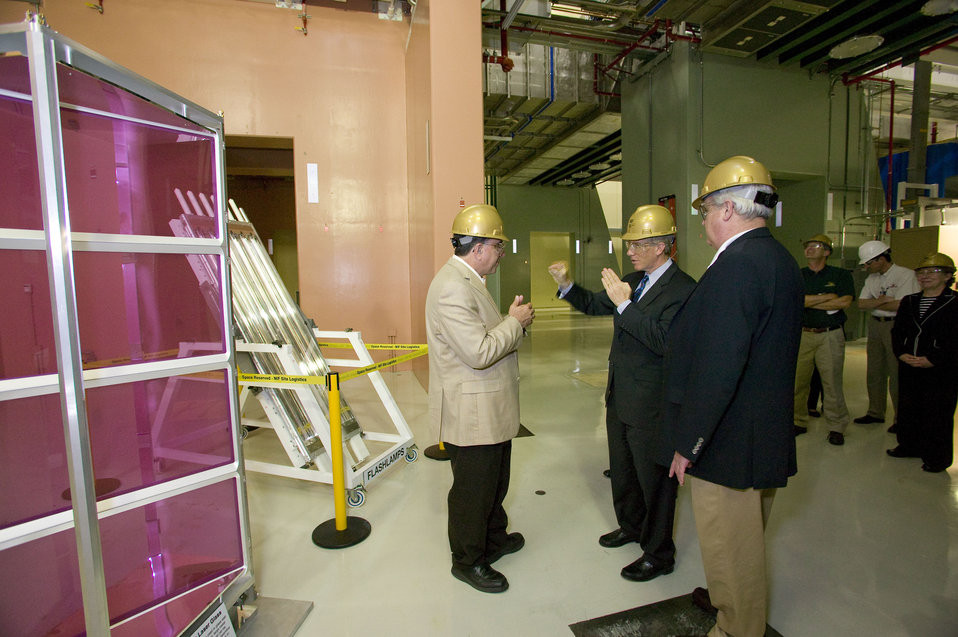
Deputy Secretary of Energy Daniel Poneman

Ed Moses left, talks about the laser glass and flashlamps used at the
NIF facility. Director George Miller is to Poneman's right.